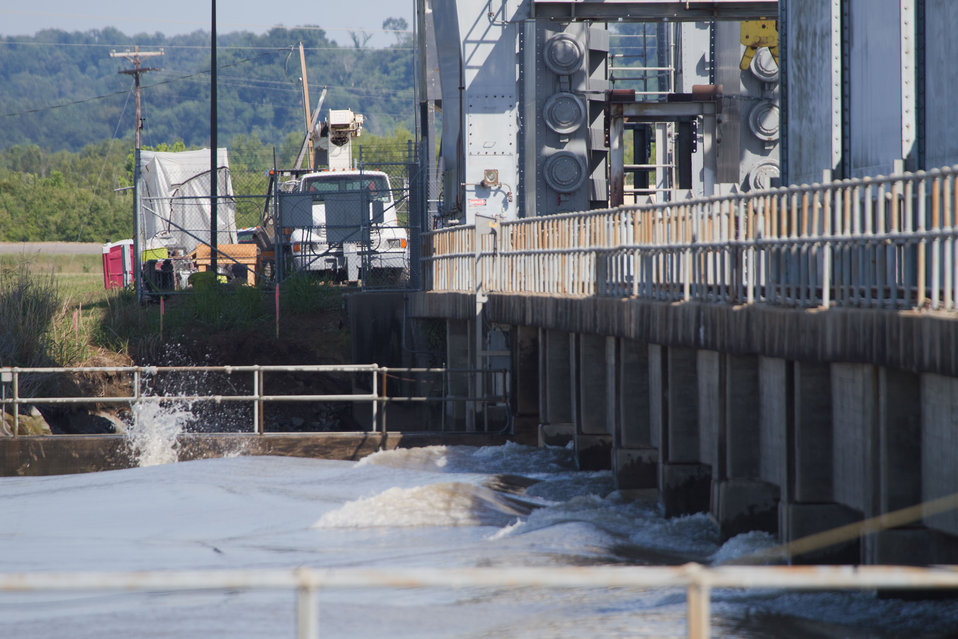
The Army Corps of Engineers conduct daily depth measurements along the intake side of The Old River Control Complex, Low Sill Structure in Concordia Parish, LA, on Tuesday, May 17, 2011. The measurements tell both the condition along the intake “ramp” and allow them to calculate the flow through the gates. The Old River Control Complex is designed to channel as much as 30 percent of the Mississippi River’s flow into the Gulf of Mexico through it’s eleven 44-foot wide gates across 566 foot span that separates the Mississippi and (the outflow channel to the) Red and Atchafalaya Rivers. Rated at 300,000 million gallons per minute (note: That’s more than seven Olympic sized swimming pools every second). Although this helps the Mississippi River, it (along with other concerns, puts back pressure on the Red River and other waterways, possibly causing some flooding of farms to avoid a catastrophic breech of the levee system. Most of the gates have been opened by a rolling crane and stored in racks. Debris, some as larger than telephone polls make their way through the gates and pool in eddies. The constant motion and contact with other objects, strip trees of their branches and bark. 20-30 pound Carp can frequently be seen jumping out of the white water.